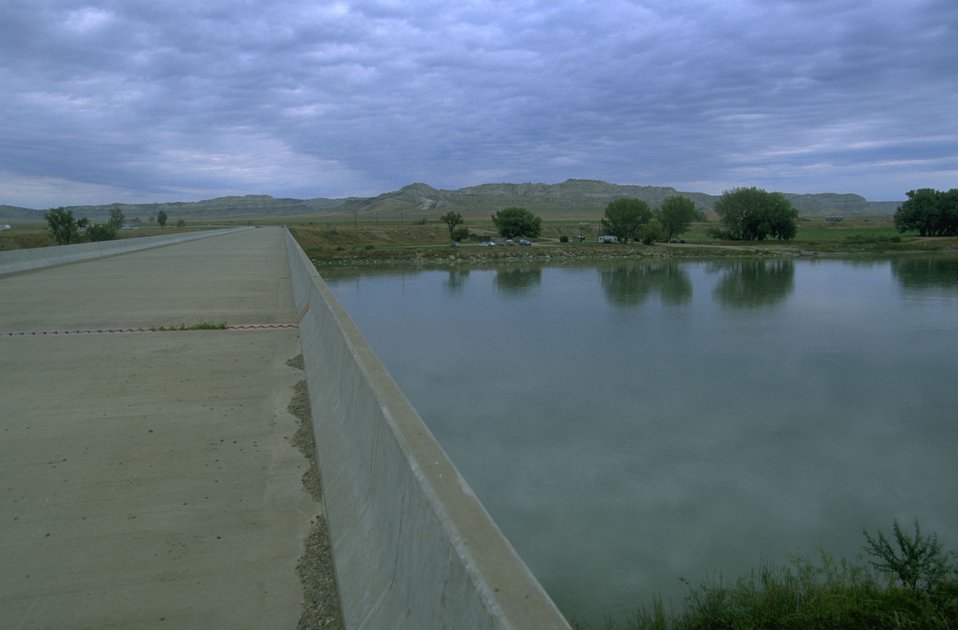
PN Bridge across the Missouri River